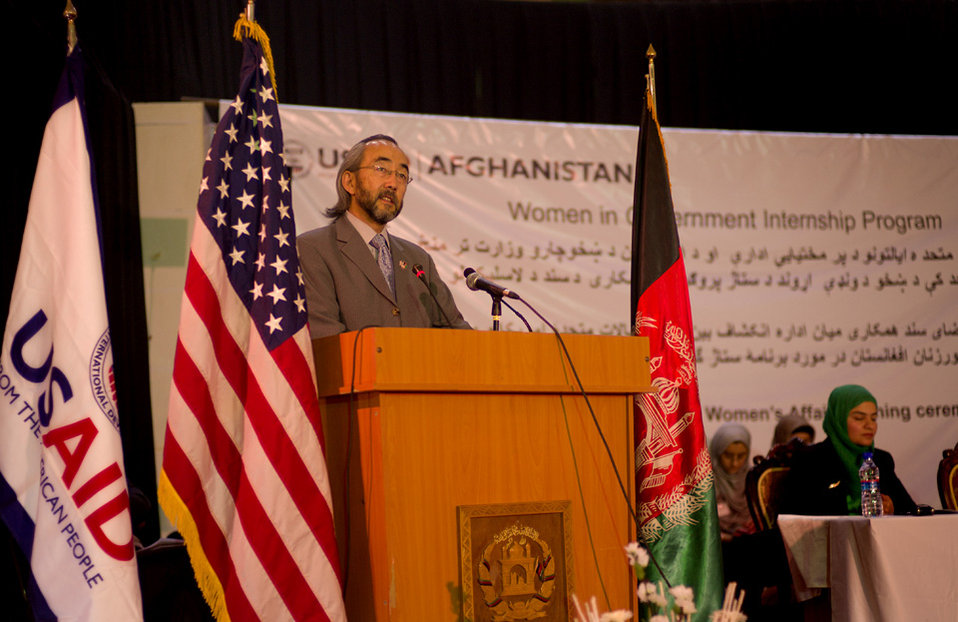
Ken Yamashita at MoWA Signing